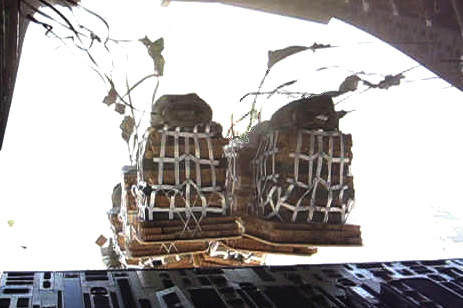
Manas C-17 drops vital cargo in Afghanistan

Airdrop Container Delivery System Bundles clear the ramp of a C-17 Globemaster III during a combat airdrop over Afghanistan Sept. 17. Members of the 817th Expeditionary Airlift Squadron, Detachment 1, at Manas Air Base, Kyrgyzstan, completed the mission by hitting two separate drop zones with more than 43,000 pounds of food, water and building supplies for troops on the ground.